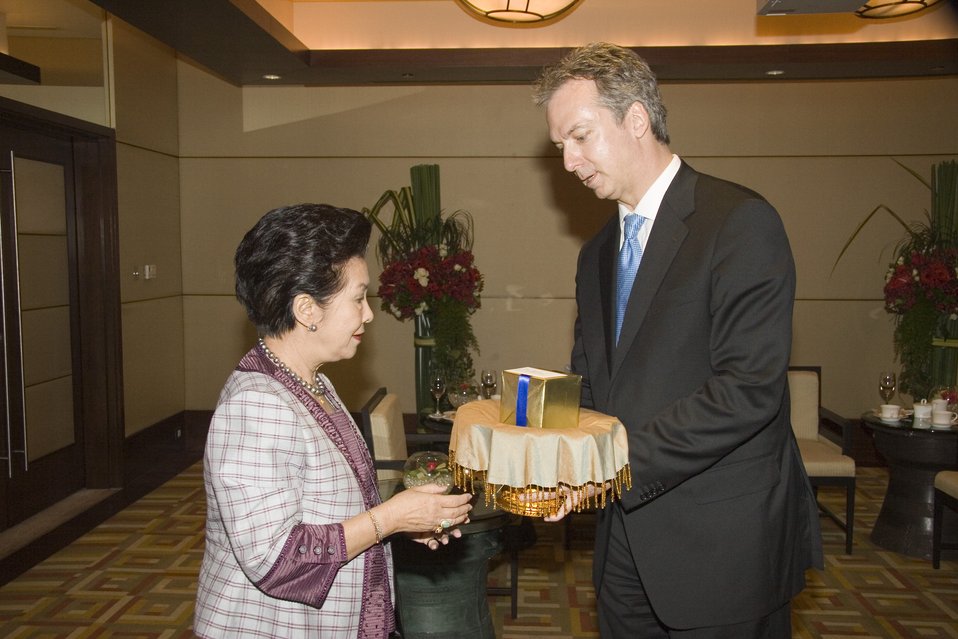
U.S. Ambassador to Thailand Meets With Thai Queen’s Lady-in-Waiting

U.S. Ambassador to Thailand Eric G. John presents a gift to the Queen’s Lady-in-Waiting, Thanpuying Nravadi Chaixanien, at the Conrad Hotel in Bangkok, Thailand July 21, 2009.